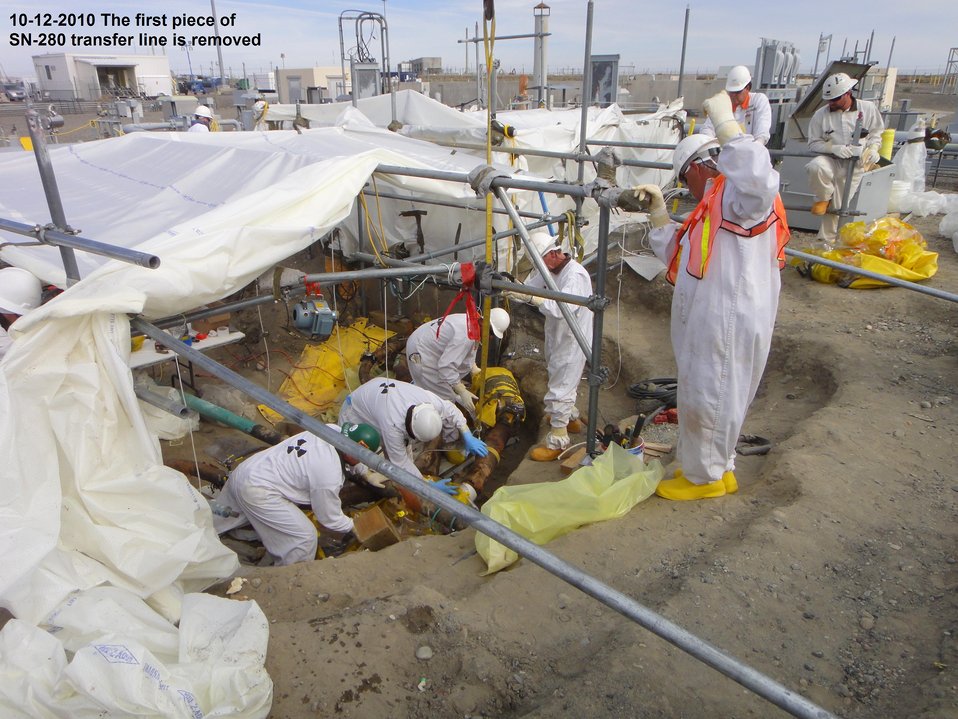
Recovery Act Program Changes the Face of Hanford’s Tank Farms

Workers remove the first portion of old pipe-in-pipe waste transfer lines from Hanford’s SY Farm. The Recovery Act-funded project calls for a total of eight pipe-in-pipe waste transfer lines to be removed from the farm by the end of September 2011.